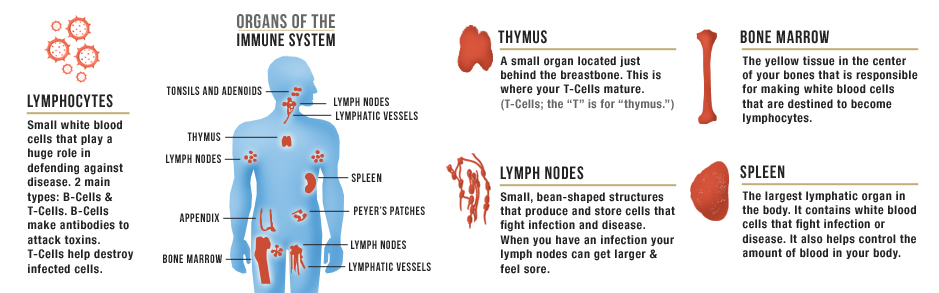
immune system101